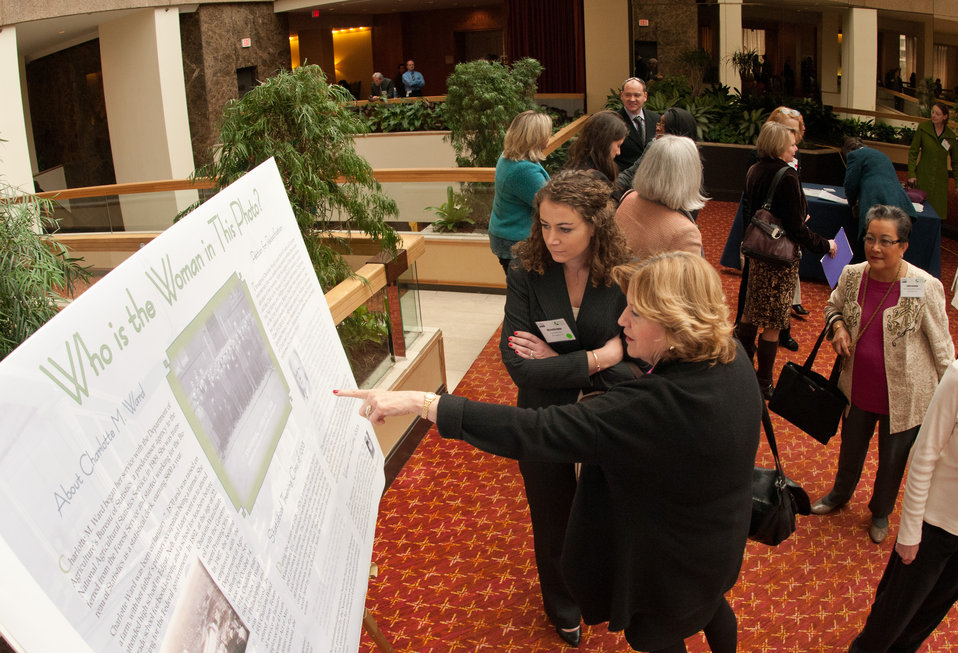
U.S. Department of Agriculture (USDA) Center for Nutrition and Policy and Promotion's Elaine McLaughlin points to something of interest to Michelle Kohn, in the career story of Charlotte M. Ward, during the Women in Agriculture-Speed Networking Event of the 2013 Agricultural Outlook Forum held at the Crystal Gateway Marriott Hotel in Arlington, VA on Friday, Feb. 22, 2013. The breakout session encourages and promotes the participation of women in American agriculture.